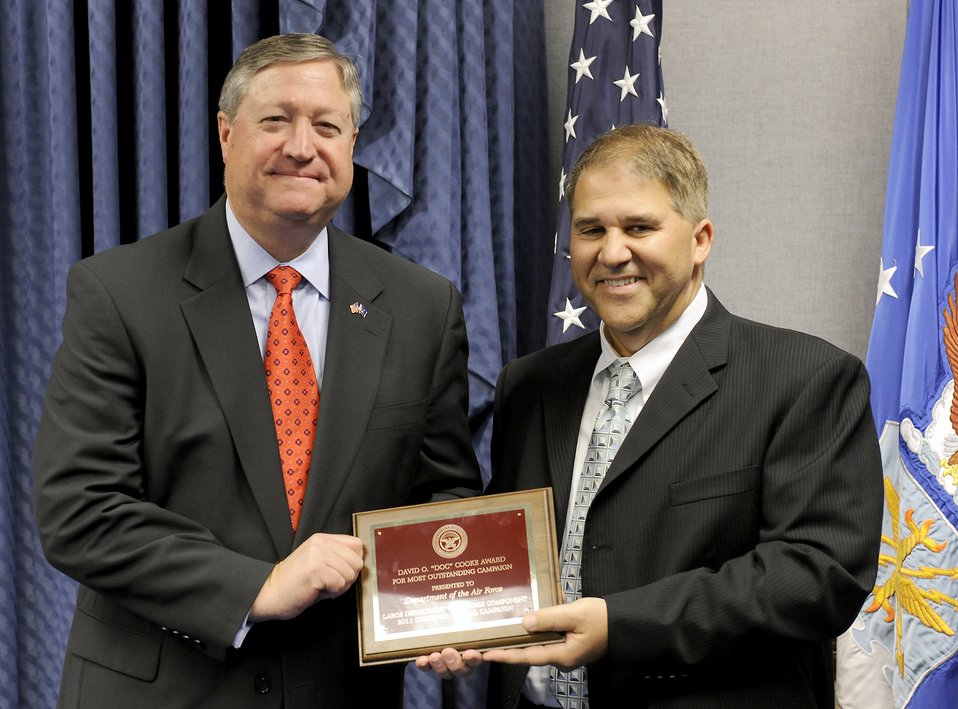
Air Force raises $2.3 million for CFC, takes top honors

Secretary of the Air Force Michael Donley accepts the Combined Federal Campaign DOD Outstanding Large Campaign from Louis Torchia on May 2, 2012, during a Pentagon ceremony. Torchia is the director of the DOD Voluntary Campaign Management Office.